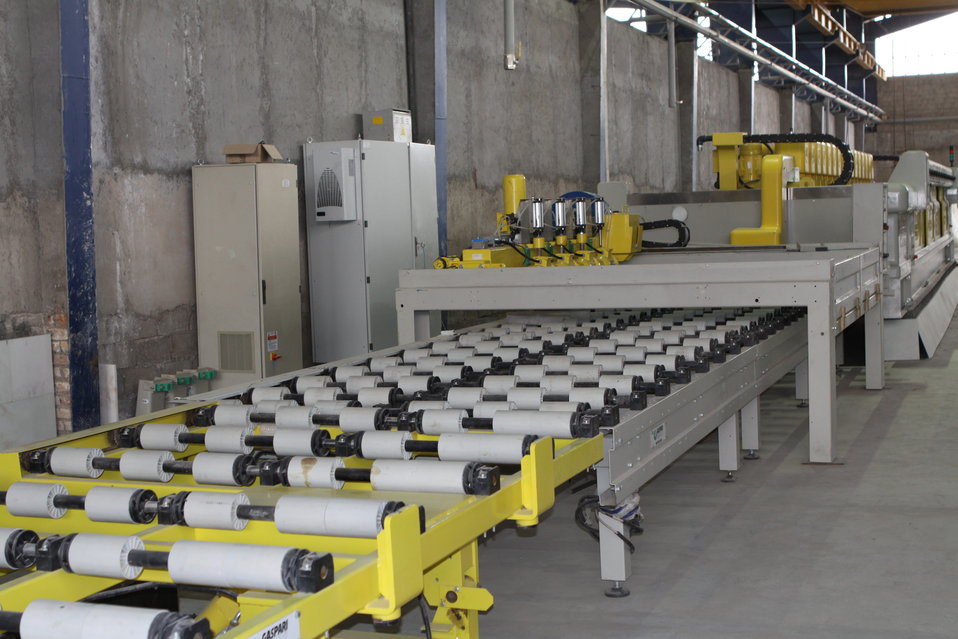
100525 Hirat Marble Conference 238